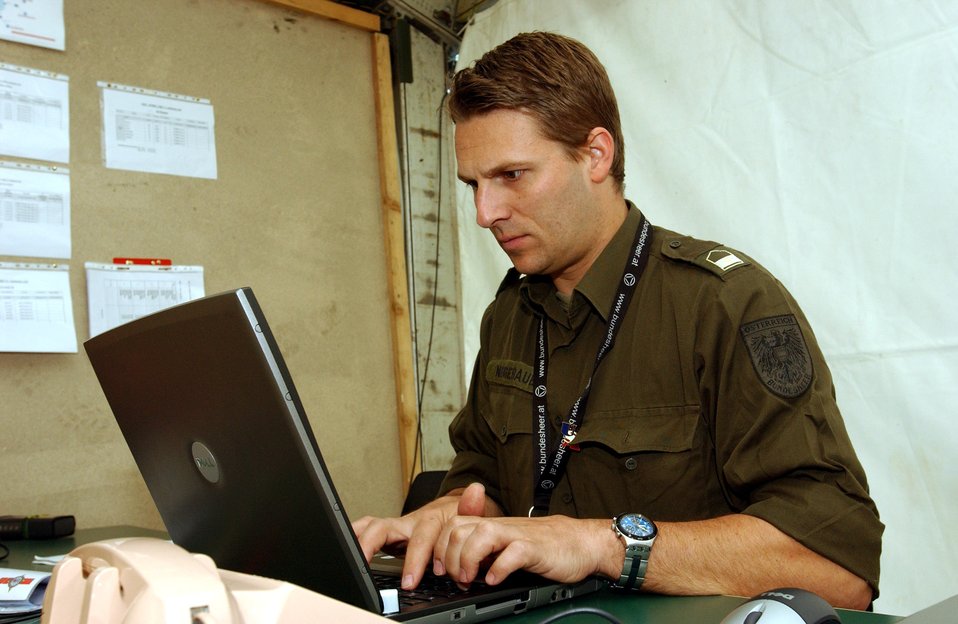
Multinational communicators network at seminars

Austrian army Warrant Officer 1 Michael Neugebauer processes network control stations for different nations during exercise Combined Endeavor 2007 at Lager Aulenbach, Baumholder, Germany. The exercise, a U.S. European Command-sponsored exercise, brings the U.S. and other nations together, especially those in NATO or Partnership for Peace, to plan and execute interoperability testing of command, control, communications and computer systems in preparation for future combined humanitarian, peacekeeping and disaster relief operations.